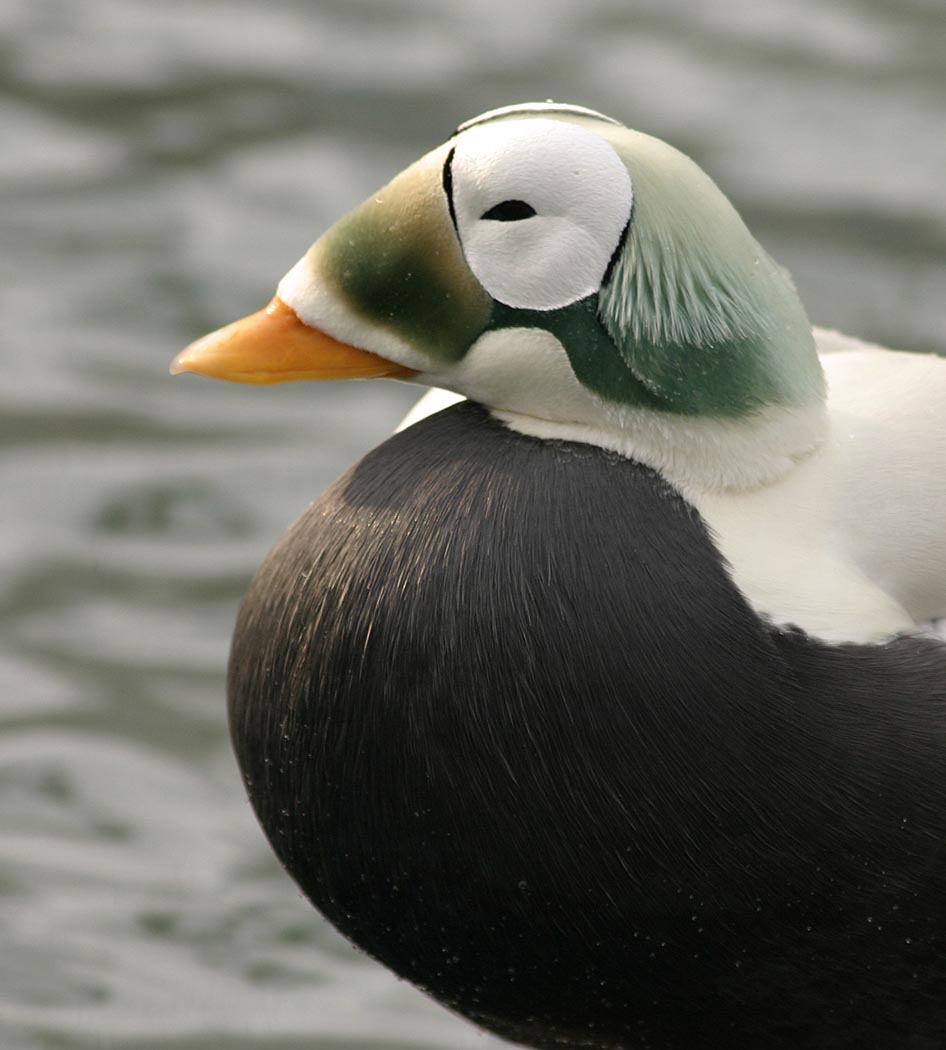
Threatened spectacled eider male (Somateria fischeri), Alaska SeaLife Center, Seward, Alaska